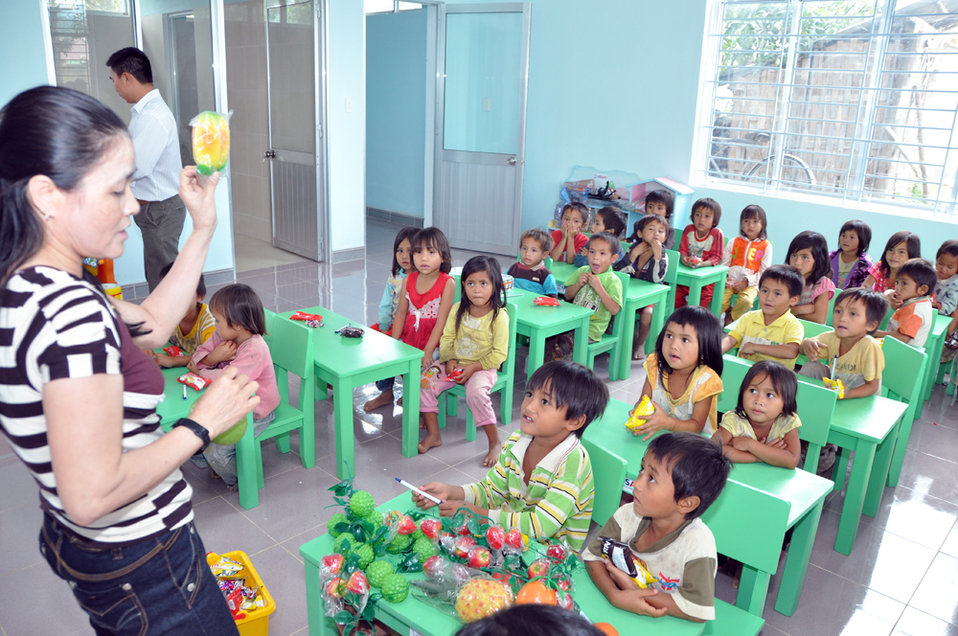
USAID contributes to refurbished pre-schools and teacher training in Vietnam